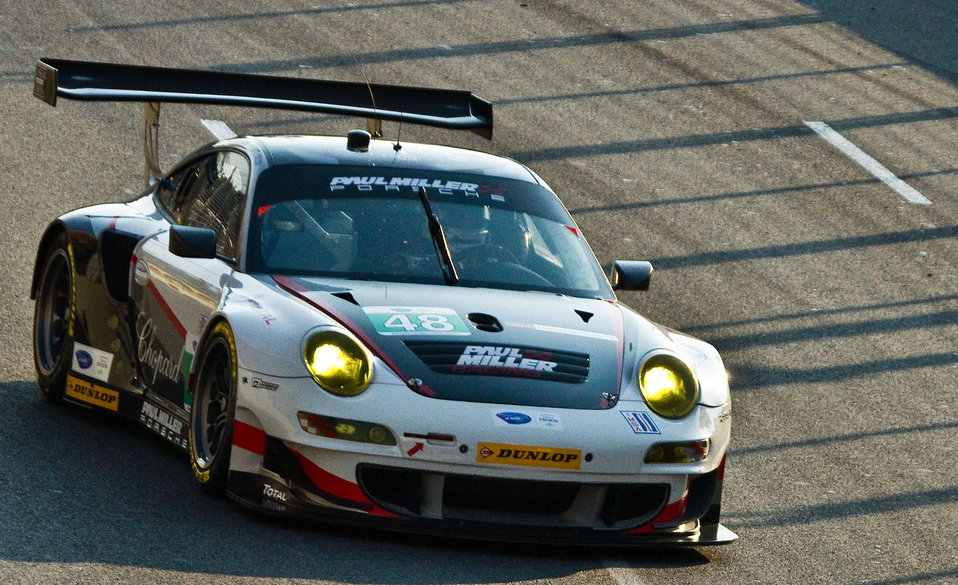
The Number 48, Porsche GT3 911 RSR of the Paul Miller Racing Team uses E85 fuel for the American Le Mans Series (ALMS) motorsport series at the Baltimore Grand Prix, on the streets of downtown Baltimore, MD, on Friday, August 31, 2012, Labor Day Weekend. ALMS says they are “the Global Leader in Green Racing by being the only racing series recognized to comply with the Green Racing protocols developed by the U.S. Department of Energy (DOE), the U.S. Environmental Protection Agency (EPA) and Society of American Engineers International (SAE).” Instead of high-octane gasoline all the cars in the series use one of 5 different forms of energy (system). Clean diesel, E85, E10, isobutanol or hybrid energy technology. The specific hybrid system, used by the Porsche GT3 cars, are a (battery-less) flywheel-based Kinetic Energy Recovery Systems. These organizations are accelerating technology development at speeds up to 200 mph, in 650-700 horsepower race cars that are based on two groups of cars; the purpose built prototype race cars and the GT
(Grand Touring) cars based on production sports cars that you can see in showrooms. From these groups, there are five classes of cars, all of which race at the same time during the race events.
The U.S. Department of Agriculture (USDA) focuses on renewable fuel sources that are profitable and sustainable. 2011 accomplishments include research and planning for renewable energy and investments in renewable energy production.
- Completed a Biofuels Roadmap proposing a plan of action to meet congressionally mandated RFS2 goals for national biofuels production.
-Coordinated five regional research centers to work on the science necessary to ensure profitable biofuels can be produced from a diverse range of feed stocks across the nation, not just in the Midwest where the industry is already thriving.
-Over three years, USDA invested about $320 million to accelerate research on renewable energy ranging from genomic research on bioenergy feedstock crops, to development of biofuel conversion processes and costs/benefit estimates of renewable energy production.
- More than 130 biodiesel and ethanol projects funded by USDA are currently producing almost 3.7 billion gallons of biodiesel and ethanol annually, enough fuel – in equivalence to gasoline – to keep five million vehicles on the road every year.
-We are supporting efforts to build five biorefineries to produce advanced biofuels in states from Florida and Michigan to New Mexico, with investments worth about $310 million. We are supporting facility upgrades and feasibility studies for advanced biofuels projects in every region of the country.